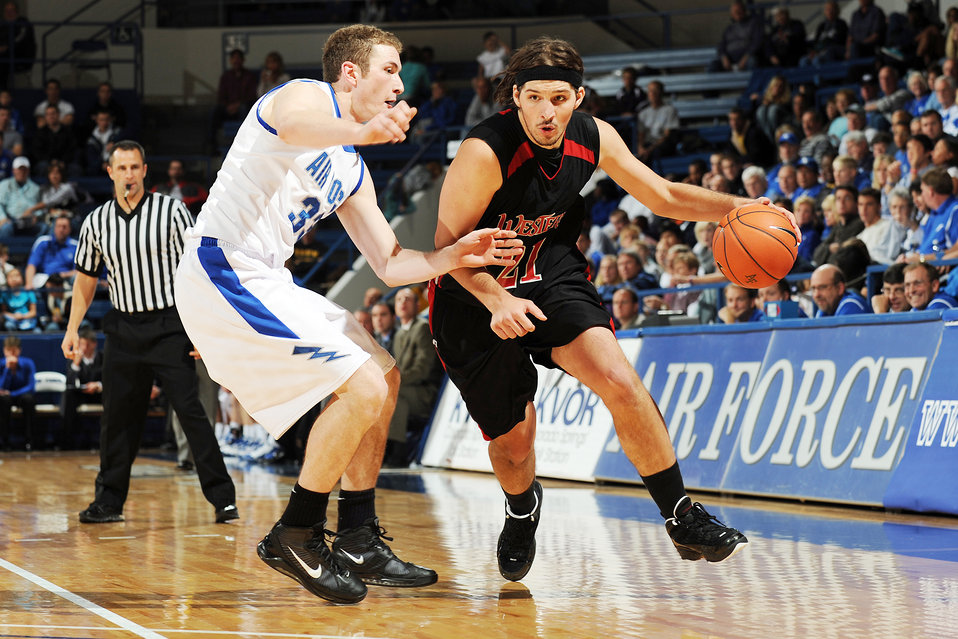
Falcons reign supreme in season opener

Falcon senior forward Mike McClain defends Western States Dan Biber Nov. 13, 2009 in Clune Arena at the U.S. Air Force Academy, Colo. In their season opener, the Falcons beat the Mountaineers 65-54.